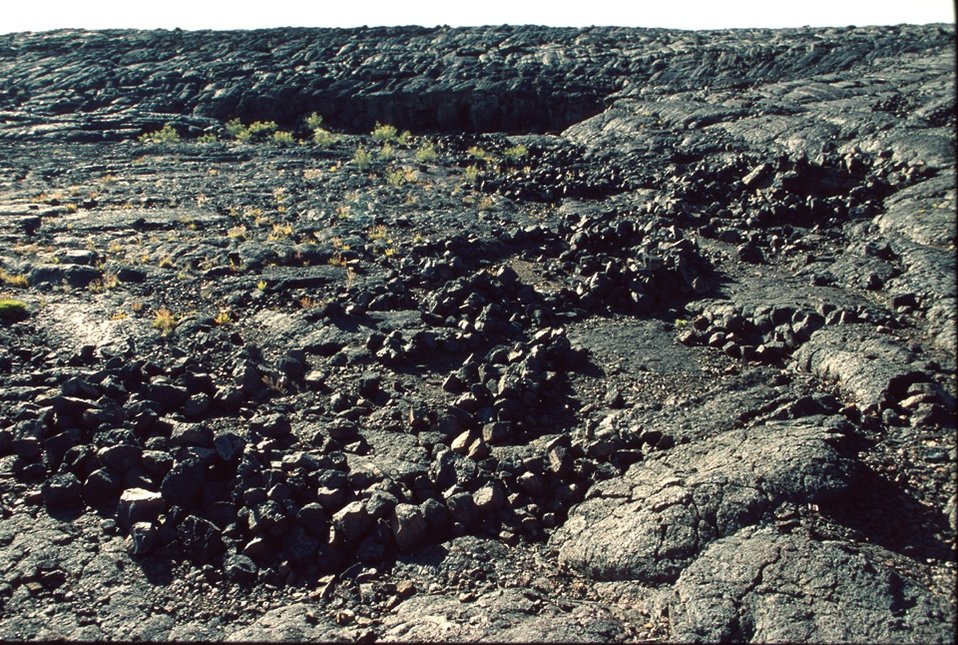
Craters of the Moon National Monument Shoshone Field Office USRD Upper Snake River District